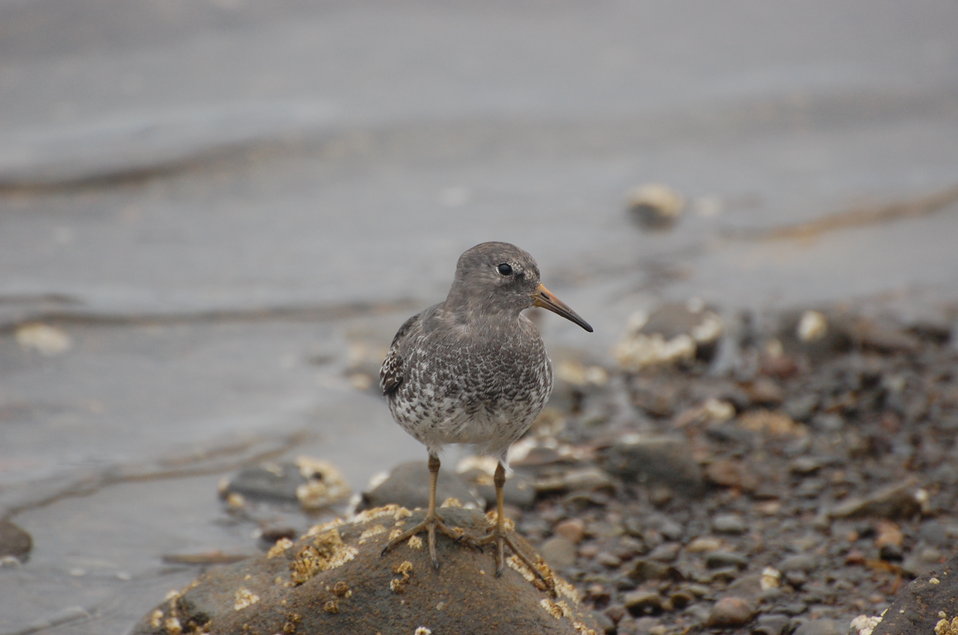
Rock Sandpiper

Winter plumage, Kinzarof Lagoon, Izembek National Wildlife Refuge
Photo by Kristine Sowl,
USFWS, Public Domain